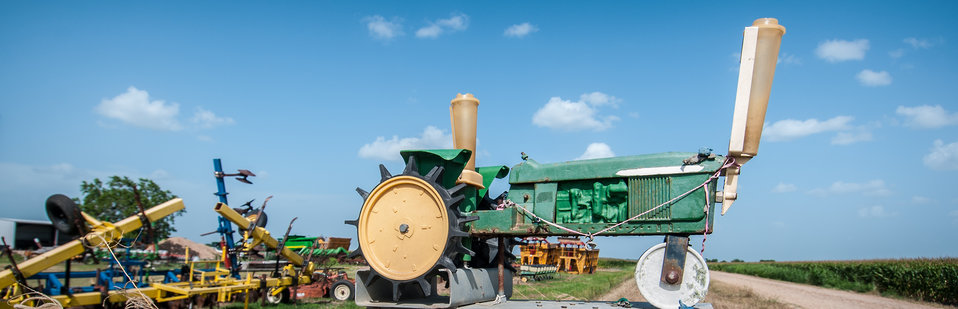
This is the unique mailbox of T and S Marek Farms in Wharton County, TX on Jun. 20, 2013. The 3,000 acre farm produces #2 yellow corn, milo (grain sorghum) for feed, upland cotton and cattle. USDA photo illustration by Lance Cheung.